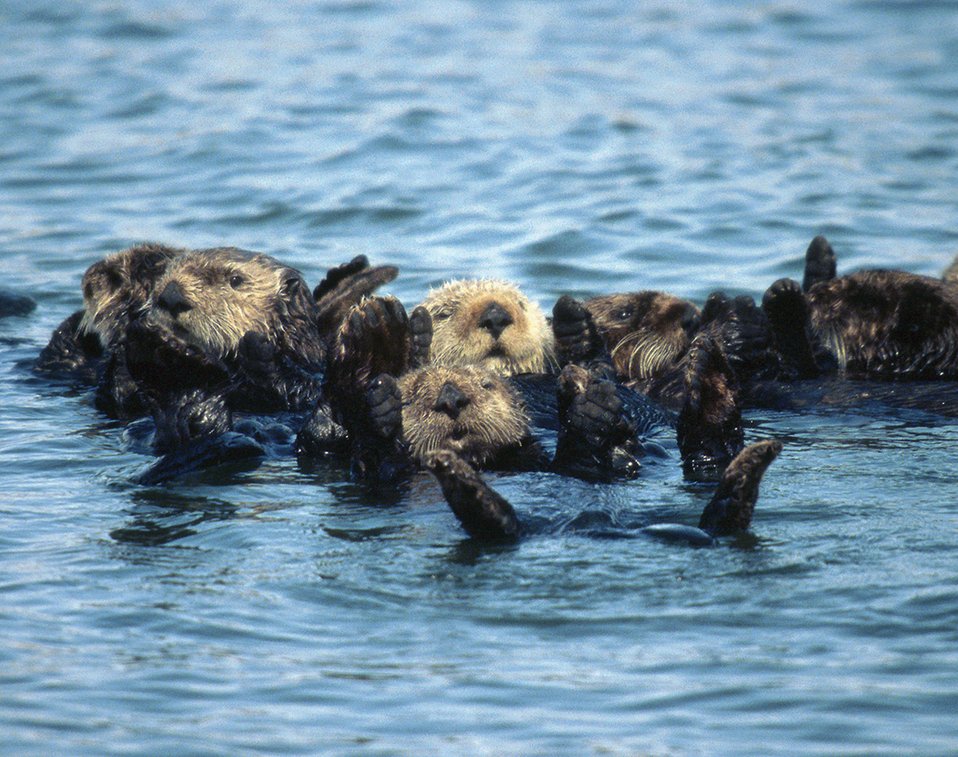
Sea Otter

A raft of sea otters.